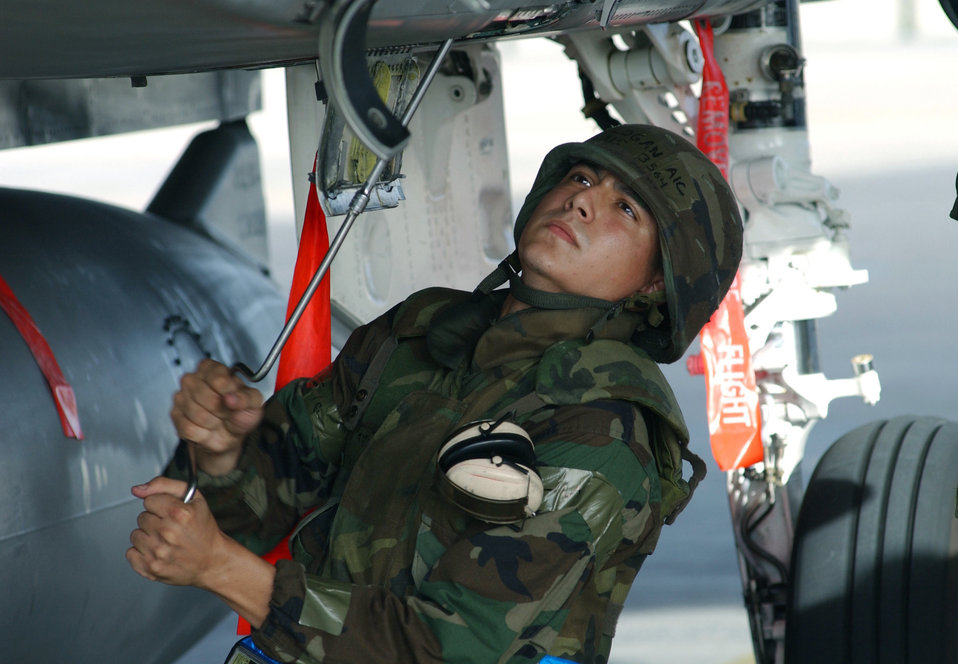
Guiding missiles

KADENA AIR BASE, Japan -- Airman 1st Class Logan Ayala prepares an aircraft for weapons during an exercise here. Airman Ayala is assigned to the 18th Aircraft Maintenance Squadron.